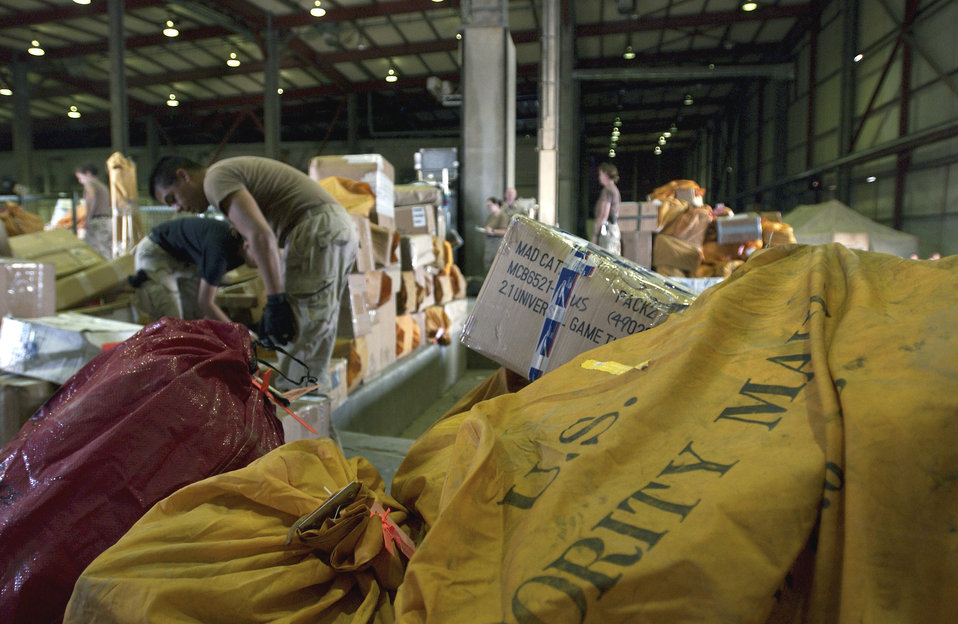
Postal handlers

BAGHDAD INTERNATIONAL AIRPORT, Iraq -- Air Force mail handlers assigned to the 447th Expeditionary Communications Squadron load mail onto pallets in 100-plus degree temperatures. The airmen handle more than 150,000 pounds of mail flowing to and from air post offices at American camps in Iraq every day.